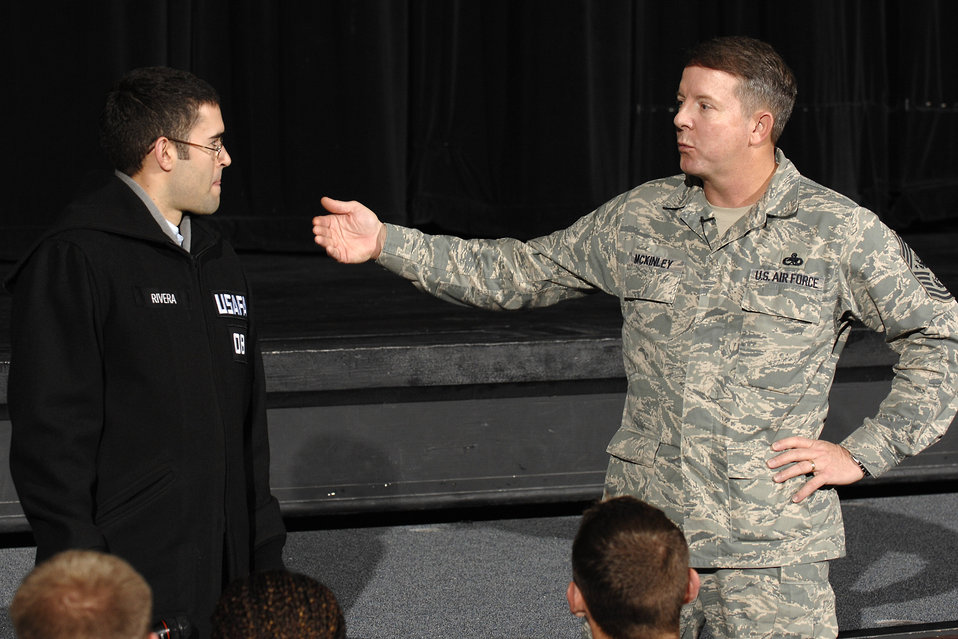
CMSAF visits Academy

Chief Master Sgt. of the Air Force Rodney J. McKinley talks with Cadet 1st Class Michael Rivera during a cadet call held April 10 in Arnold Hall at the U.S. Air Force Academy in Colorado. Chief McKinley visited Academy Airmen to brief on the Air Force's top priorities. Cadet Rivera is assigned to Cadet Squadron 25 at the Academy.